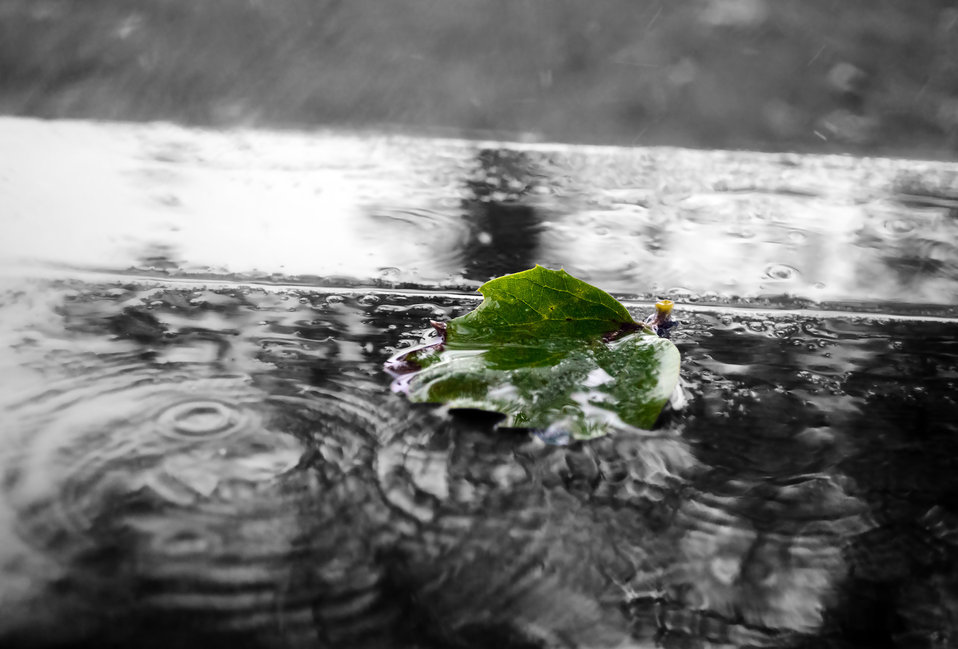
Green leaf in the rain.